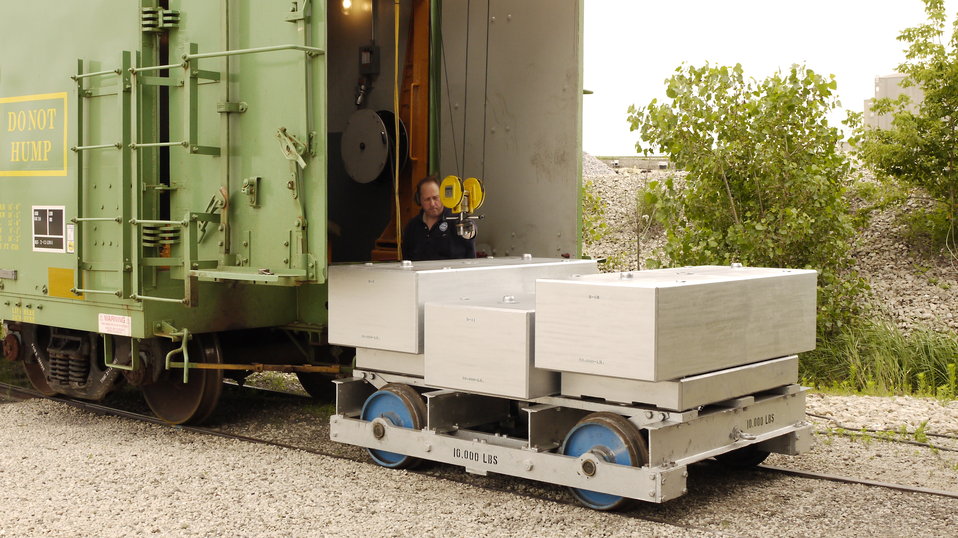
The U.S. Department of Agriculture’s (USDA) Grain Inspection, Packers, and Stockyard Administration (GIPSA) entered into an agreement with the National Institute of Standards and Technology (NIST) and the Association of American Railroads (AAR) in 1980 transferring responsibility to USDA’s GIPSA to maintain the Master Scale facility in Chicago, IL and calibrate all the master scales in the continental U.S. annually.